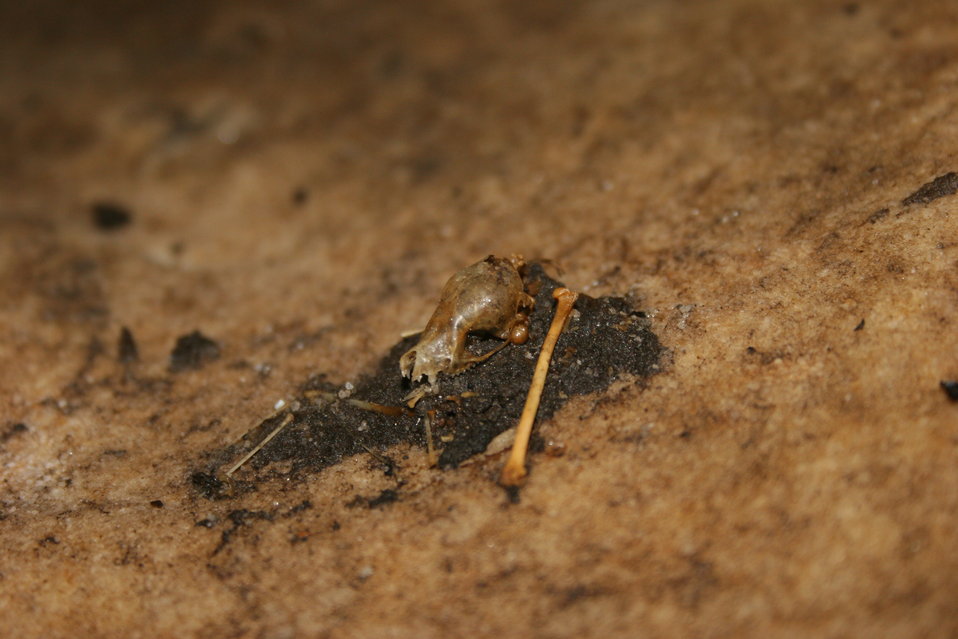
Bat skull and remains in Mt. Aeolus Cave